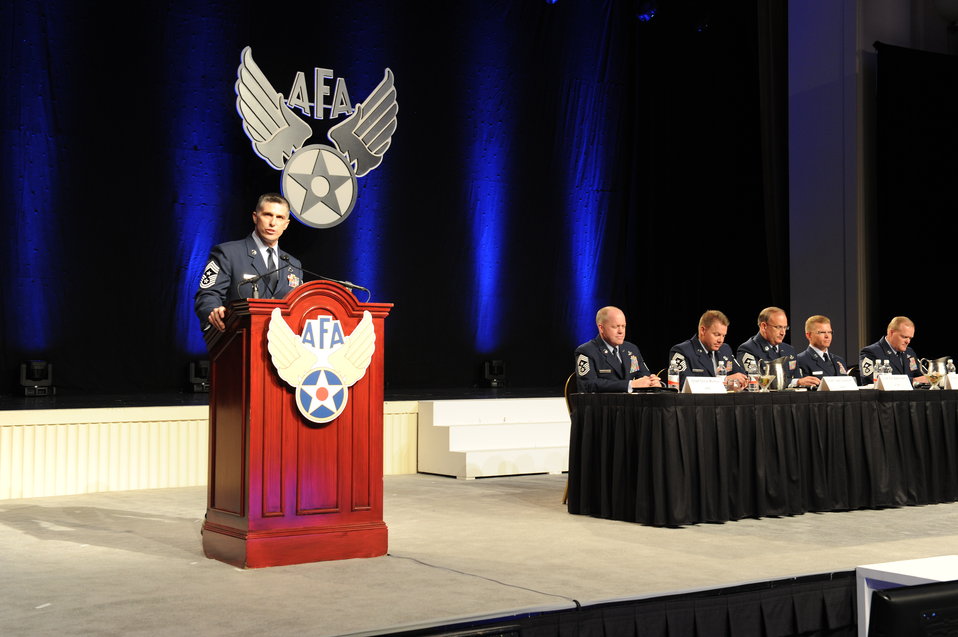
Command chiefs address concerns, offer advice during AFA convention forum

Chief Master Sgt. Pat Battenberg, the Air Force District of Washington command chief, answers a question from a member of the audience Sept. 19, 2011, at the Command Chief Master Sergeant Forum during the Air Force Association's 2011 Air & Space Conference & Technology Exposition in National Harbor, Md. The forum was an opportunity for Airmen to have a direct line of communication with top leaders in the Air Force.